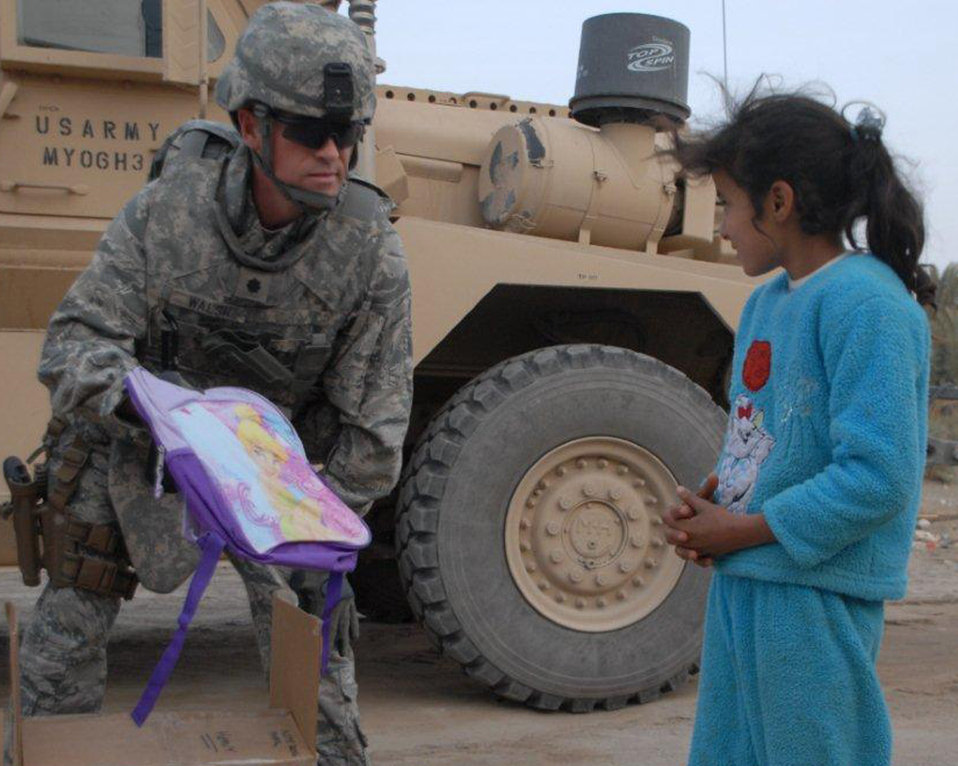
Airmen donate school supplies to local Iraqi children

U.S. Air Force Lt. Col. Tom Walsh, Echelon Above Division-Advise and Train senior advisor and Benbrook, Texas, native, hands a “tinkerbell” backpack to a local Iraqi girl Dec. 16 at Ur Elementary School near Tallil Air Base, Iraq. Colonel Walsh is deployed from the Pentagon.